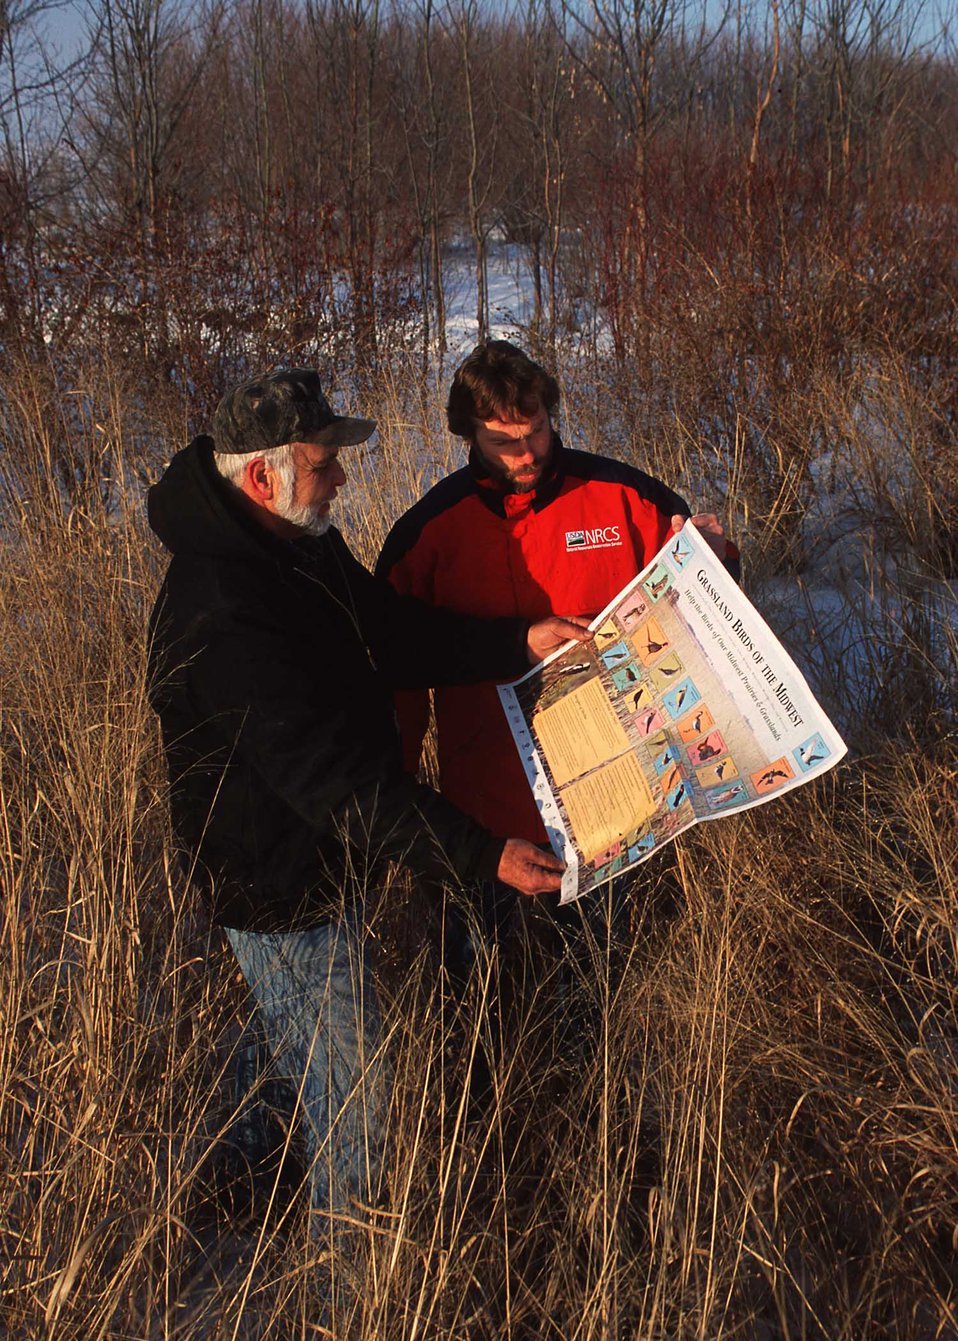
Native grasses are part of a buffer system along Bear Creek in Story County in central Iowa. They aid wildlife and the environment.